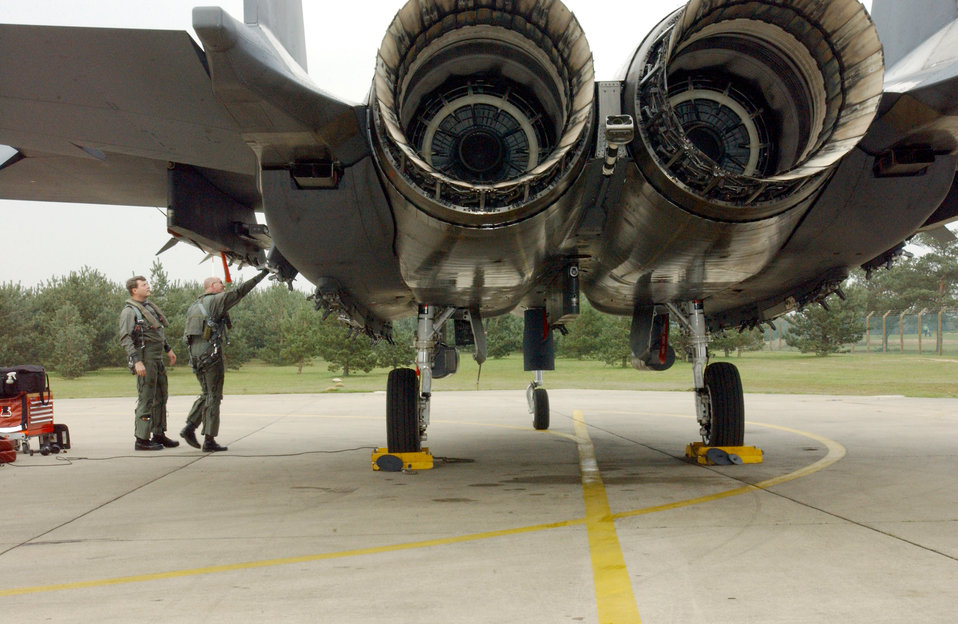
Preflight for strike

ROYAL AIR FORCE LAKENHEATH, England -- Lt. Cols. William Taylor (left) and George Sewell go through preflight checks before launching an F-15E Strike Eagle here April 14. Colonel Taylor is the chief of advanced programs for U.S. Air Forces in Europe and Colonel Sewell is an F-15 pilot with the 48th Fighter Wing here.